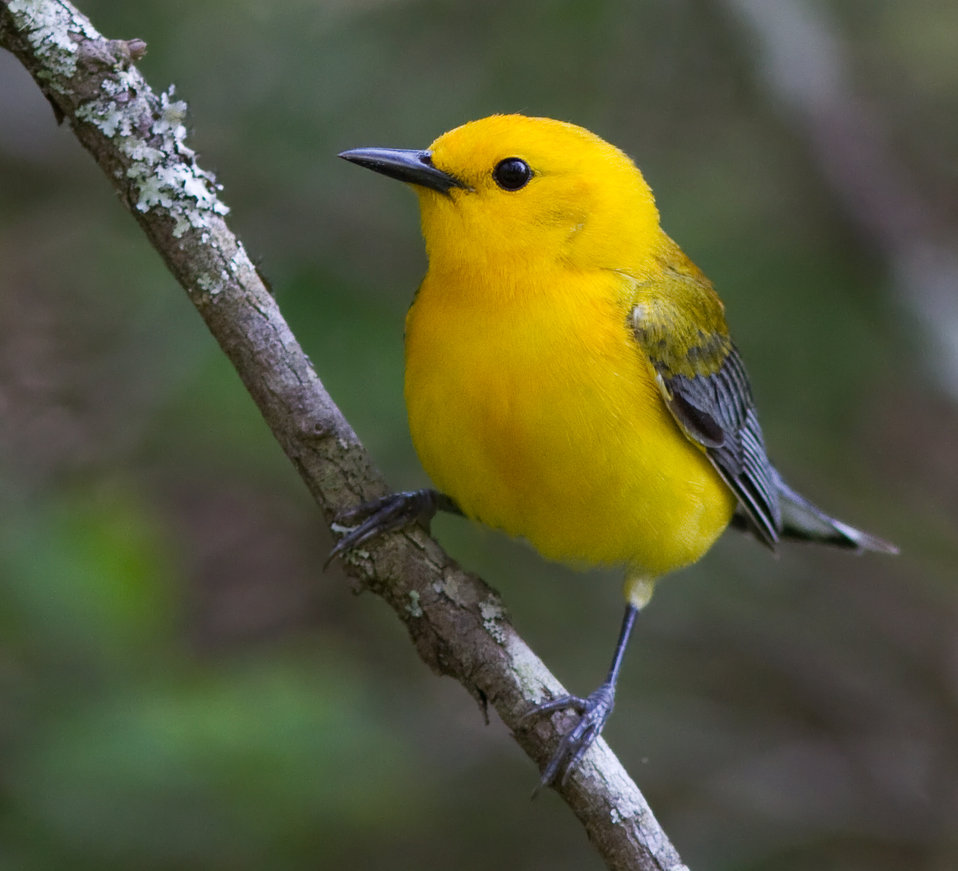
Prothonotary warbler, Great Dismal Swamp NWR